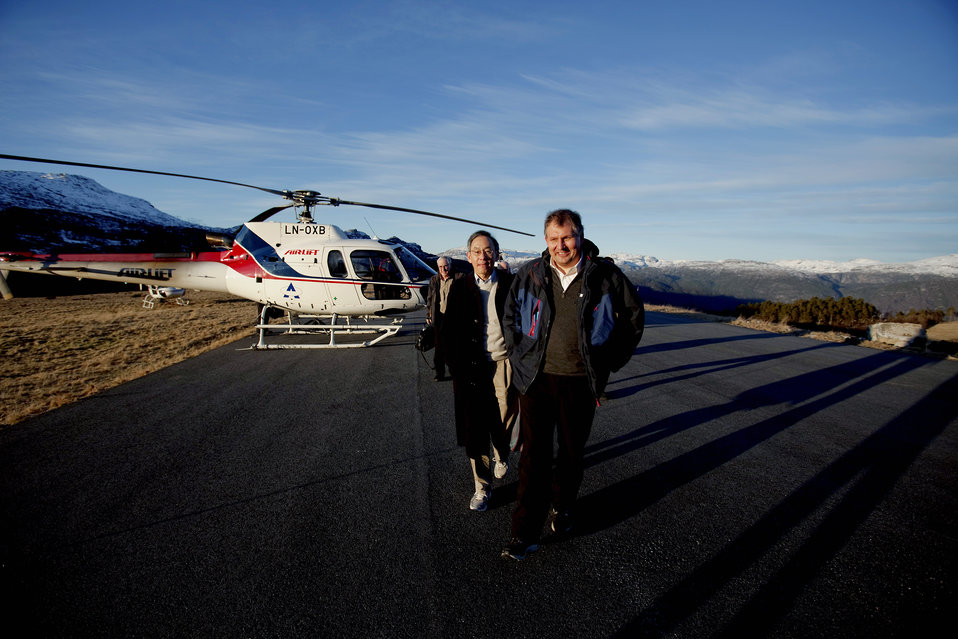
arrival suldal

KVILLDAL 20091212.
Olje- og energiminister, Terje Riis-Johansen og USAs energiminister Stephen Chu fikk lørdag omvisning på Ulla-Førre anlegget, Norges største kraftstasjon.
Foto: Stian Lysberg Solum / Scanpix